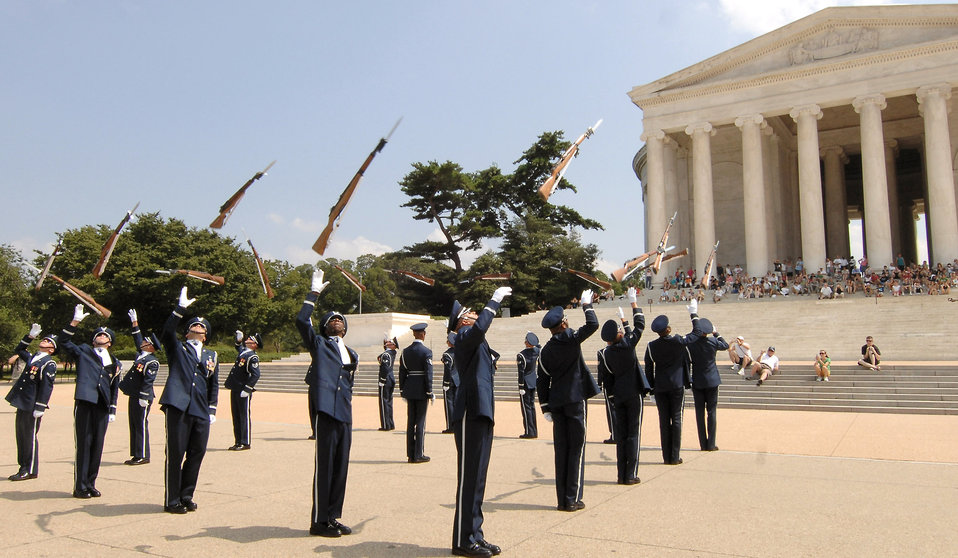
Momumental performance

The United States Honor Guard Drill Team performs at the Jefferson Memorial in Washington D.C July 8 during their Summer Drill Series. These drills will be performed around the National Capitol Region until the 29th of July.